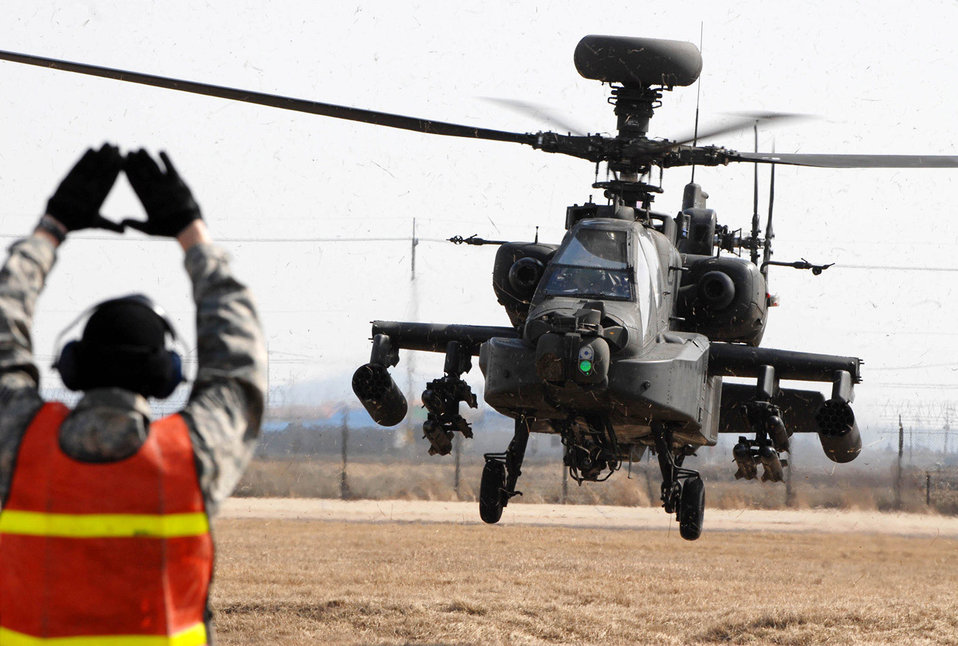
Korea Air Component Comand commander holds 6 ACCES

Senior Airman Paul Epping marshal's an AH-64 Apache helicopter March 1 at Kunsan Air Base, South Korea. The Apache's arrived from Camp Humphrey's, Bravo Company 4-2, as part of the Key Resolve/Foal Eagle Exercise, enhancing combat readiness and joint interoperability. Airman Epping is a crew chief from the 8th Maintenance Squadron.